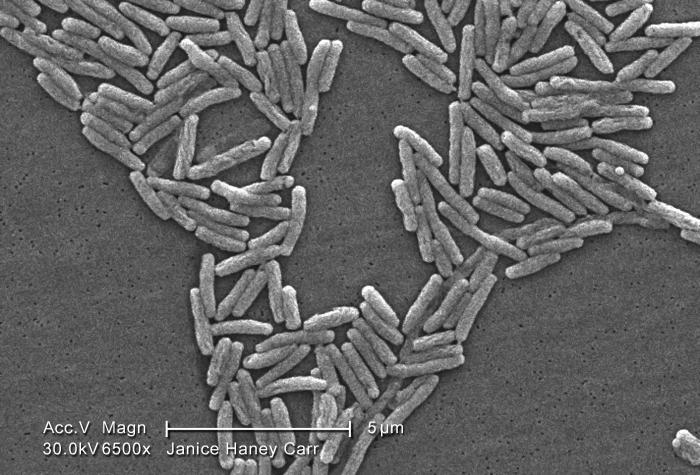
Under a moderately-high magnification of 6500X, this scanning electron micrograph (SEM) depicted a large number of Gram-negative Legionella pneumophila bacteria. Please see PHIL 11092 through 11152 for additional SEMs of these organisms, specifically PHIL 11112 for a colorized version of this image.